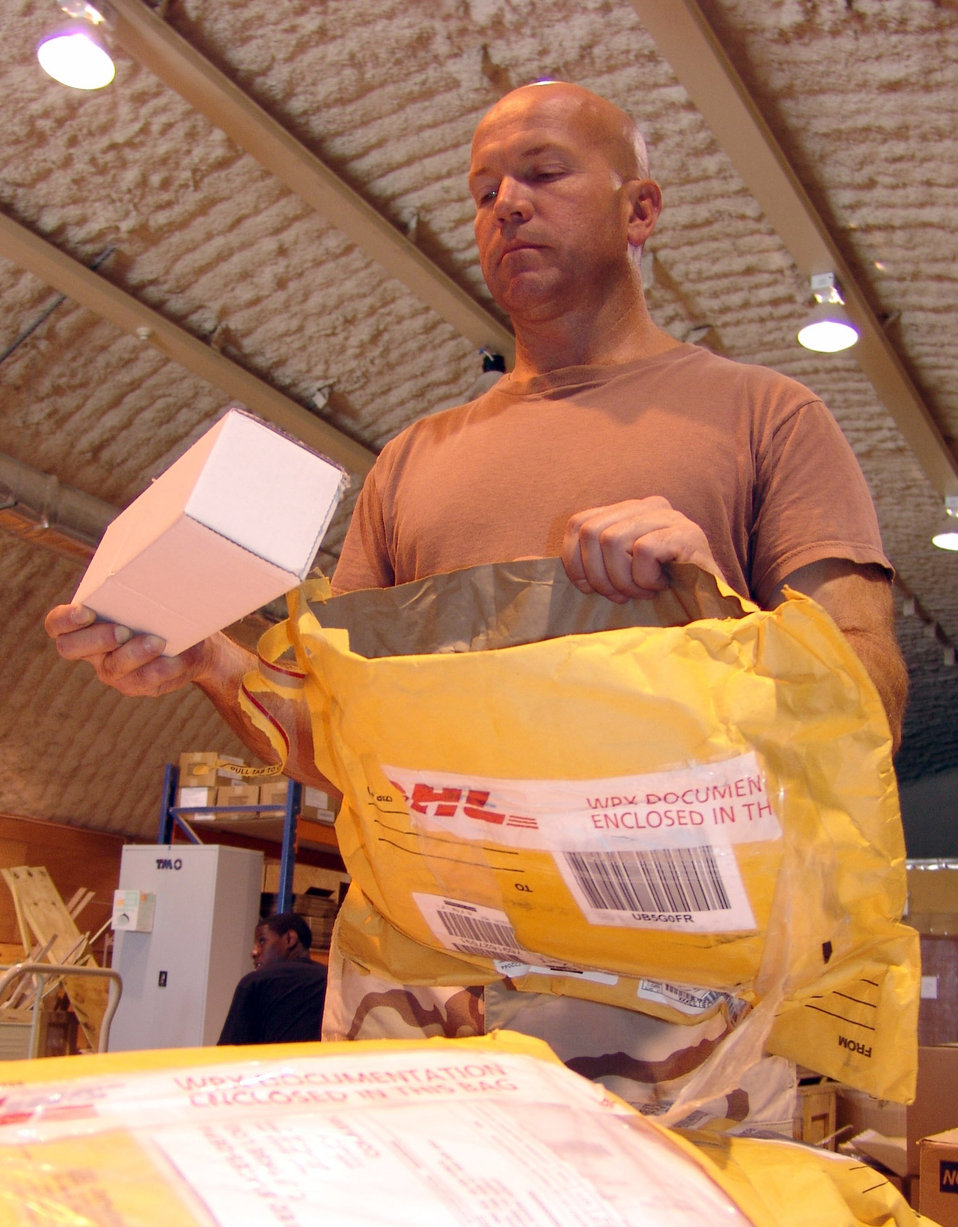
Supply issues

SOUTHWEST ASIA -- Tech Sgt. Kennard Phillips verifies contents of packages against an inventory list at a supply receiving warehouse. He ensures the correct parts and quantity match the receiving documents, which includes everything from tools to tires. He is assigned to the 386th Expeditionary Logistics Readiness Squadron at a forward-deployed location and is in the Delaware Air National Guard.